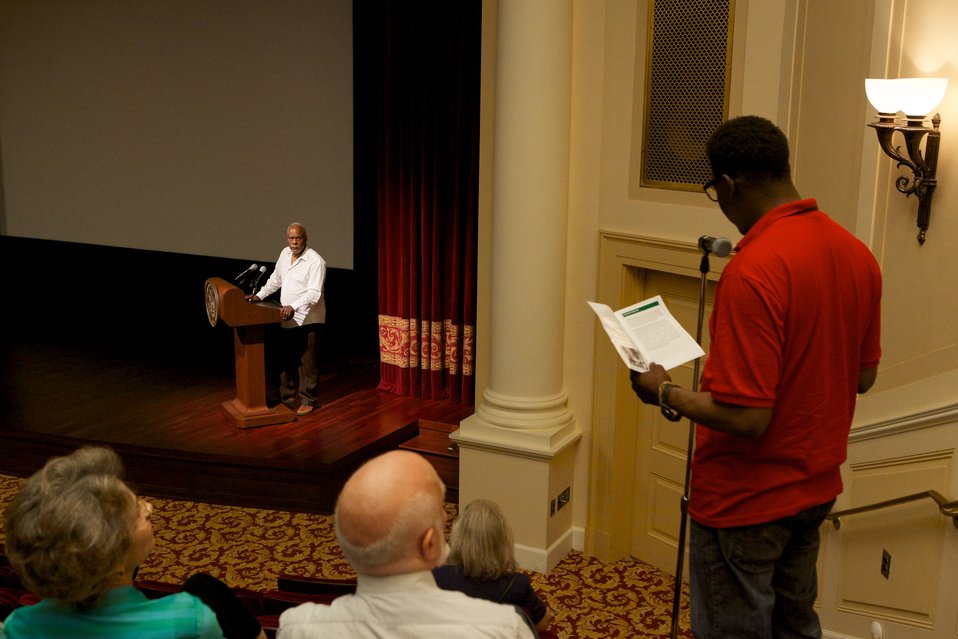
Freedom Summer